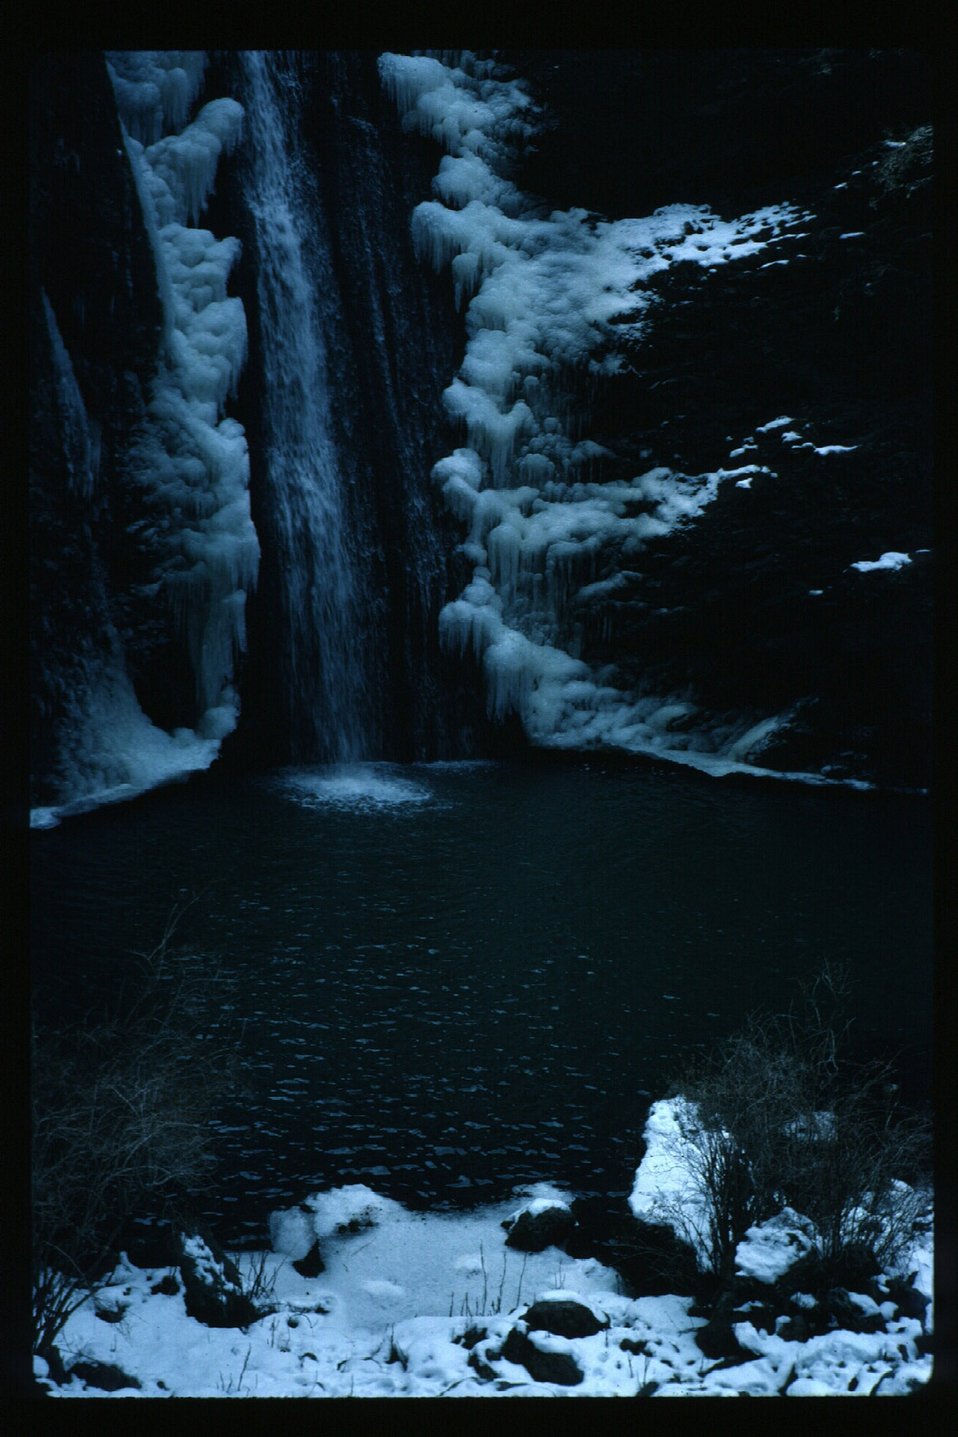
Scenic Jump Creek Falls LSRD Lower Snake River District